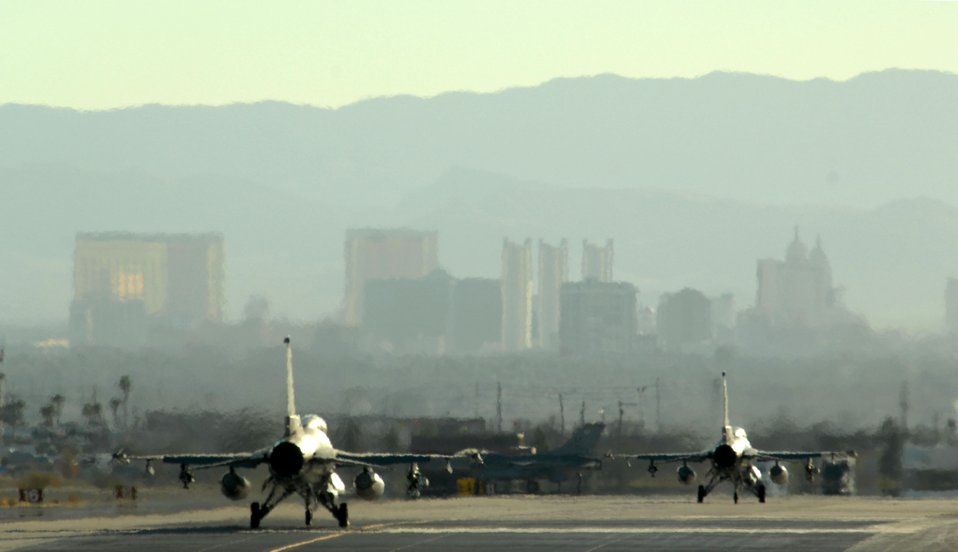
Falcons support Eagle school

With Las Vegas as a backdrop, two F-16 Fighting Falcons taxi out Oct. 18 at Nellis Air Force Base, Nev. The F-16s are assigned to the 63rd Fighter Squadron from Luke AFB, Ariz. The 63rd FS is at Nellis AFB supporting the F-15 Eagle Weapons School Instructor Course in an adversary tactics role.